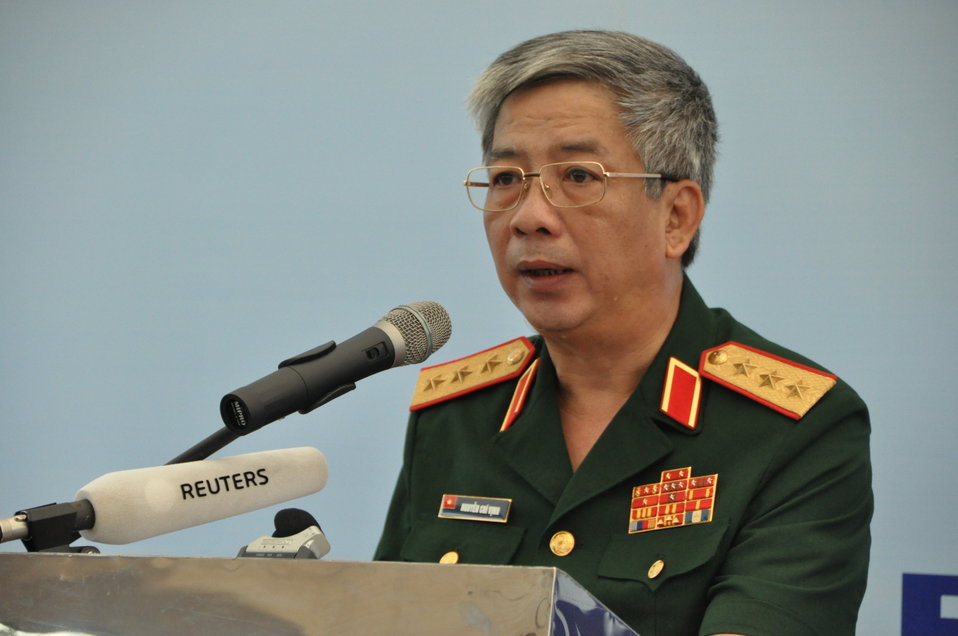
Lt. Gen. Nguyen Chi Vinh, Vice Minister of National Defense, speaks at the Environmental Remediation of Dioxin Contamination at Danang Airport Project Launch

August 9, 2012